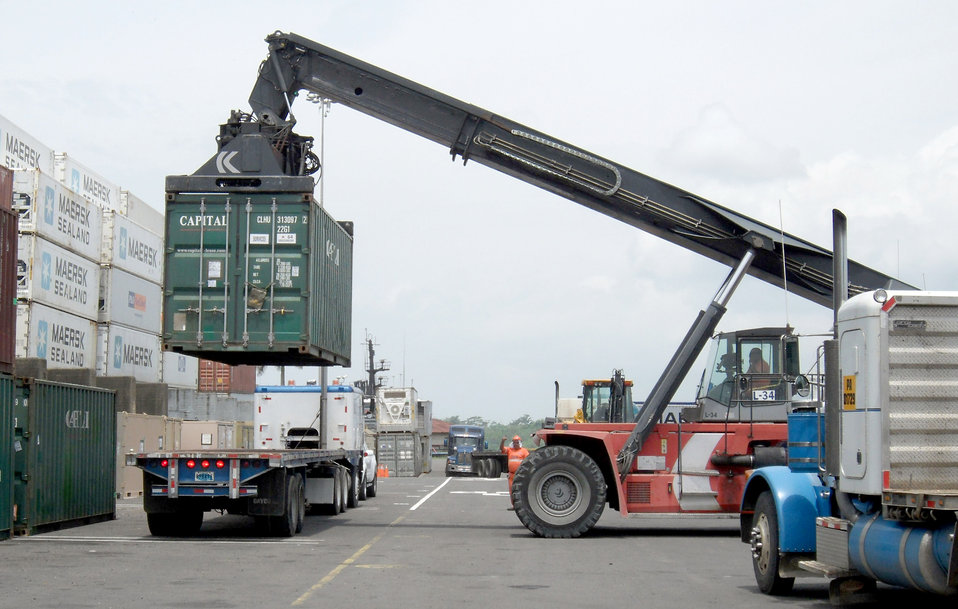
New Horizons Panama 2010

Airmen load cargo containers onto a flatbed truck at the Panama City port in support of New Horizons Panama 2010, a 12-week humanitarian assistance mission. More than 250 Airmen, Soldiers and Marines will deploy to six construction sites and five medical missions in Panama.